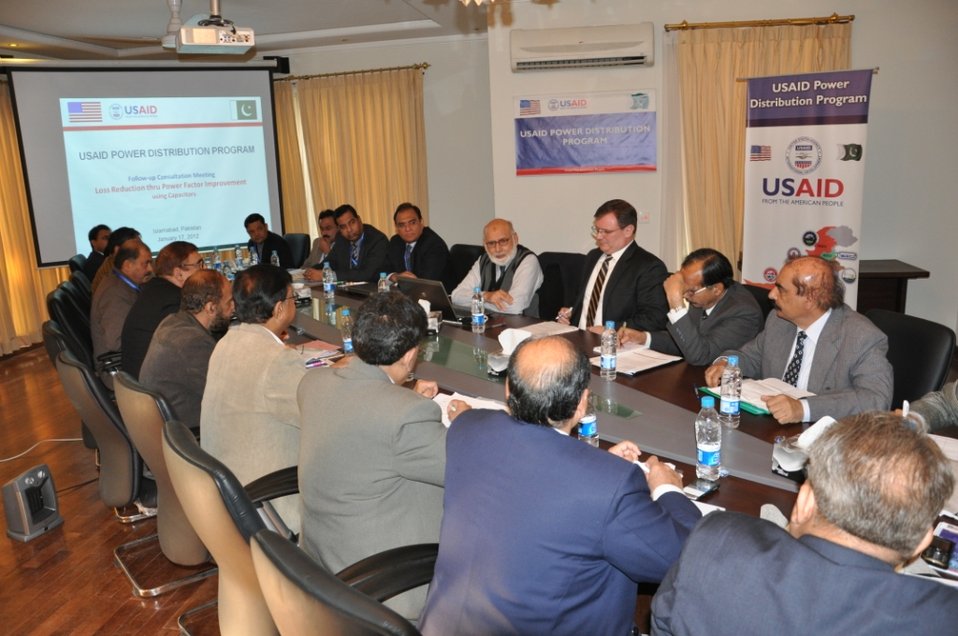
17 Jan - Consulatation Meeting - Loss Reduction through Power Factor Improvement using Capacitors